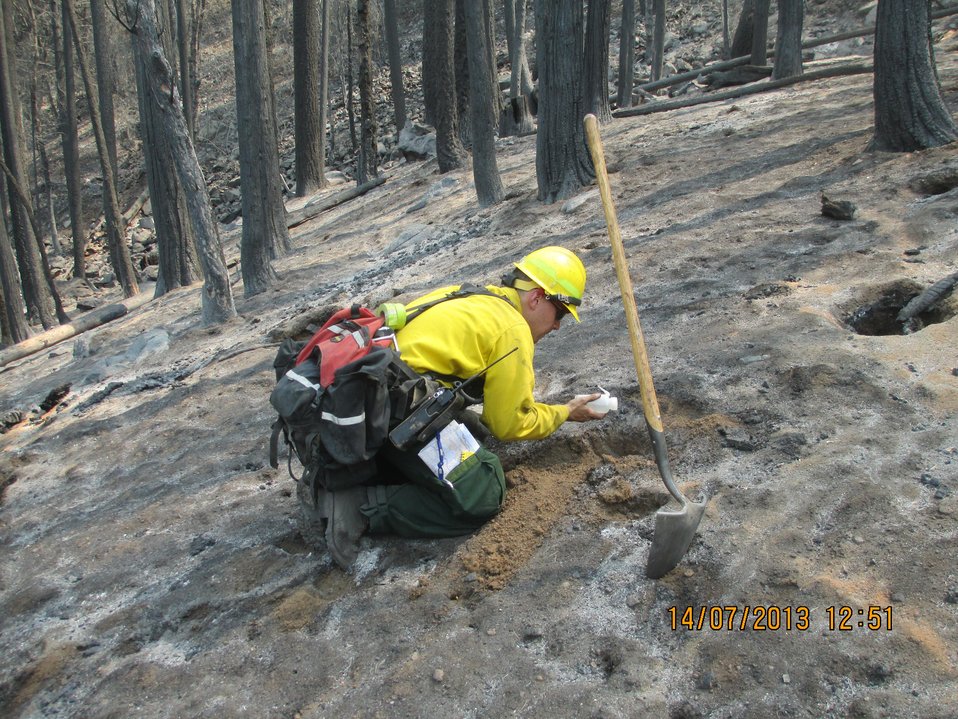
Burned Area Emergency Response (BAER) soil scientist assesses burned area of Rim Fire. BAER teams start work even before the fire is completely extinguished at the Rim Fire. BAER is a rapid assessment of burned watersheds by a BAER team to identify imminent post-wildfire threats to human life and safety property and critical natural or cultural resources on National Forest System lands and take immediate actions to implement emergency stabilization measures before the first major storms. Fires result in loss of vegetation exposure of soil to erosion and increased water runoff that may lead to flooding increased sediment debris flows and damage to critical natural and cultural resources. BAER team members implement seeding and mulching installation to prevent erosion, erect temporary water run-off control structures that will protect recovering areas, and installation of warning signs, replace safety related facilities, remove safety hazards, prevent permanent loss of habitat for threatened and endangered species, and prevent the spread of noxious weeds and protect critical cultural resources. The Rim Fire in the Stanislaus National Forest near in California began on Aug. 17, 2013 and is under investigation. The fire has consumed approximately 256,169 acres and is 84% contained.